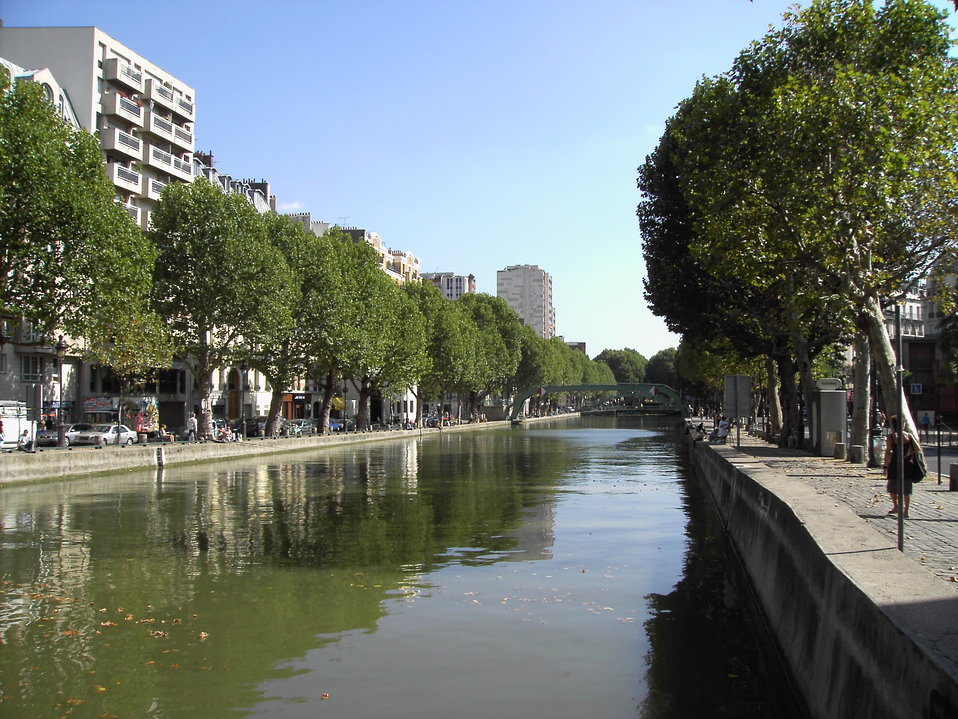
050907 Paris 135j7 CanalStMartin